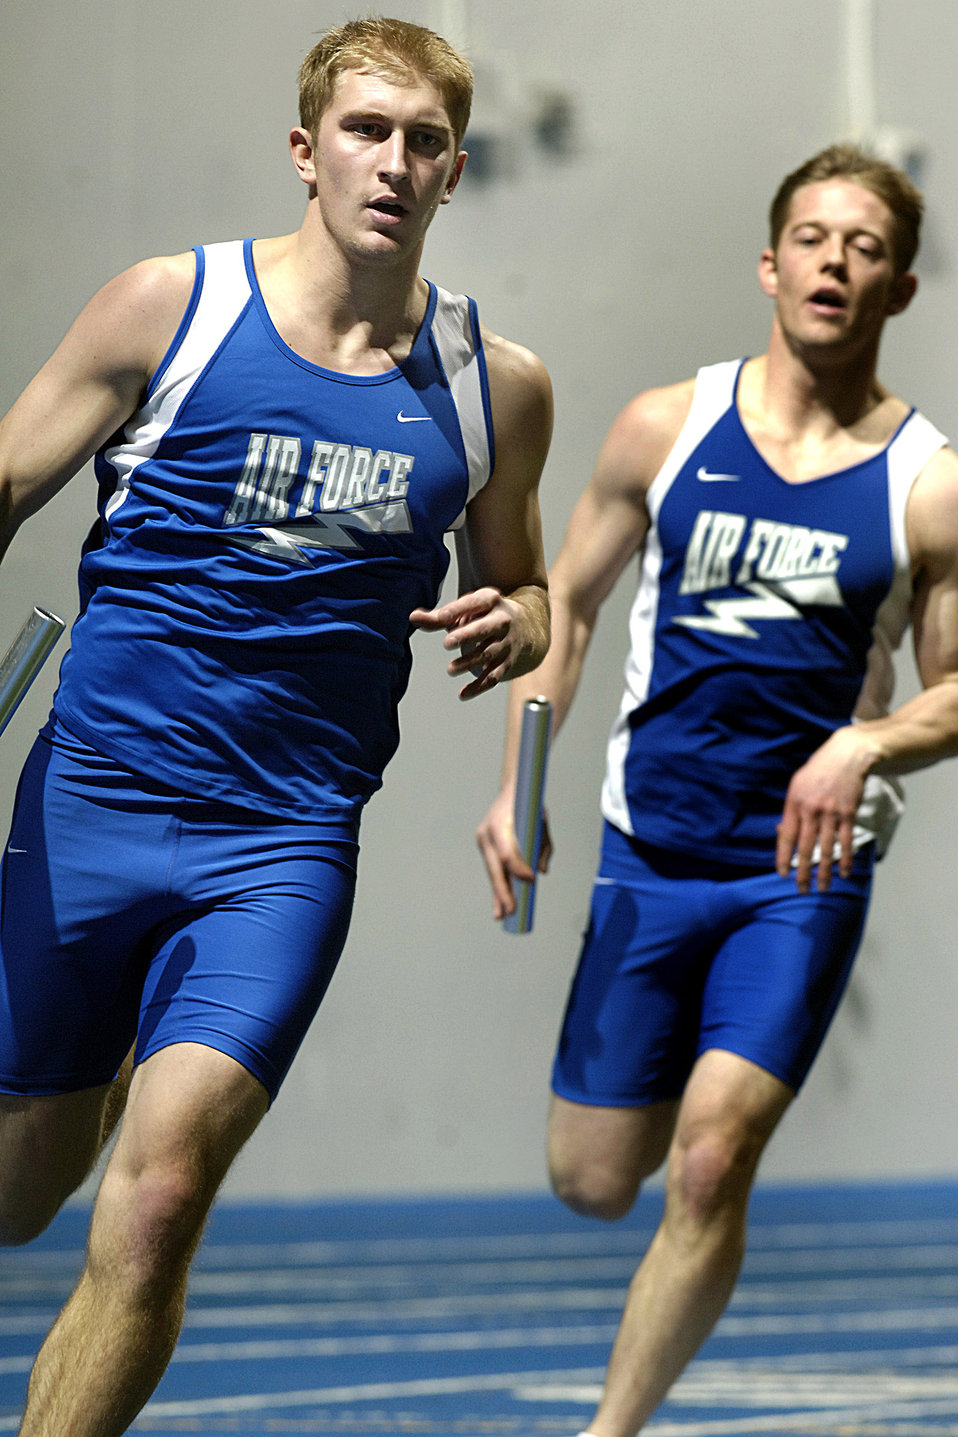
Mile relay

U.S. Air Force Academy Falcon senior Matt Gensic (from left) and sophomore Chris Batson compete in the mile relay as the Air Force track and field team officially opened the season by hosting the annual Air Force All-Comers Meet Jan. 13 at Colorado Springs, Colo. Gensic's team finished sixth with a time of 3 minutes 44.1 seconds, while Batson's squad placed seventh with a 3:46.68 time.